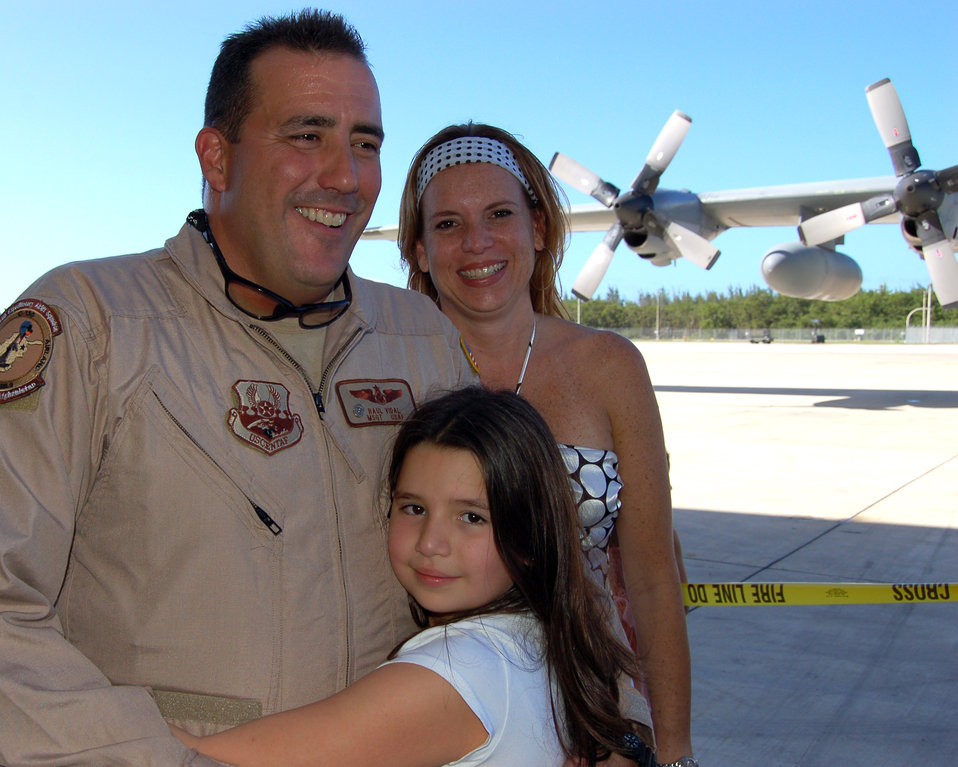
Buccaneers Return Home

Master Sgt. Jose Vidal gets a hug from his wife, Giselle, and daughter, Marina, after his return home to Mu√±iz Air National Guard Base, Puerto Rico, Dec. 16. The 198th Airlift Squadron loadmaster deployed to Bagram Air Base, Afghanistan. The unit is part of the 156th Airlift Wing of the Puerto Rico Air National Guard.